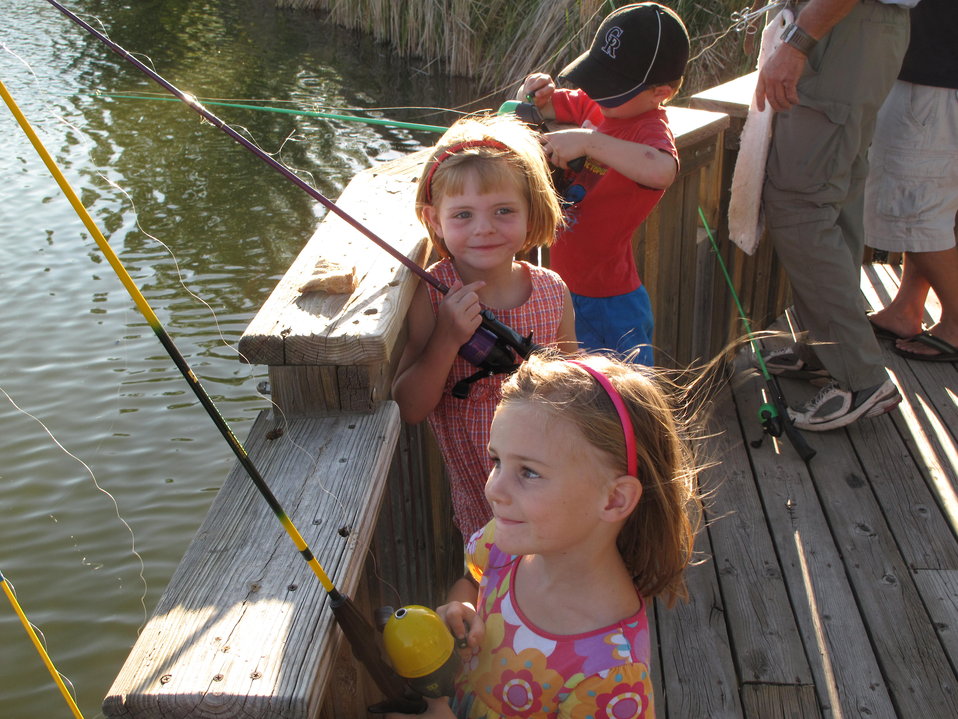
Youth Enjoying Fishing

Fishing trip at the Rocky Mountain Arsenal.